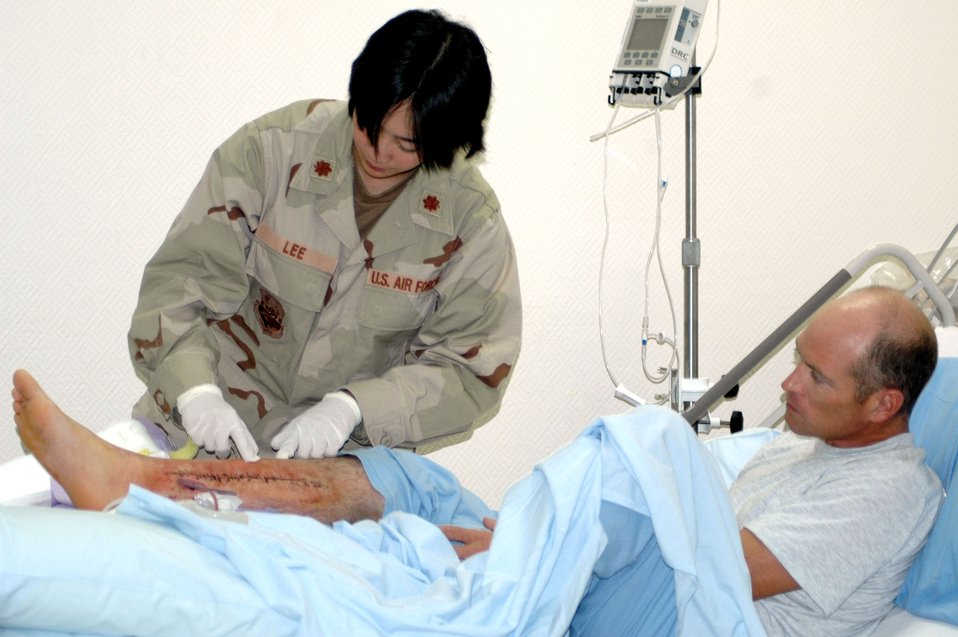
Airman Manual saves life

SOUTHWEST ASIA (AFPN) -- Maj. (Dr.) Crystine Lee checks the status of Staff Sgt. Stephen Jones' leg at the hospital here. Had Sergeant Jones not taken his Self Aid and Buddy Care training seriously, he may not have survived. Major Lee is deployed here from Travis AFB, Calif. and Sergeant Jones is deployed here from Cannon AFB, N.M.